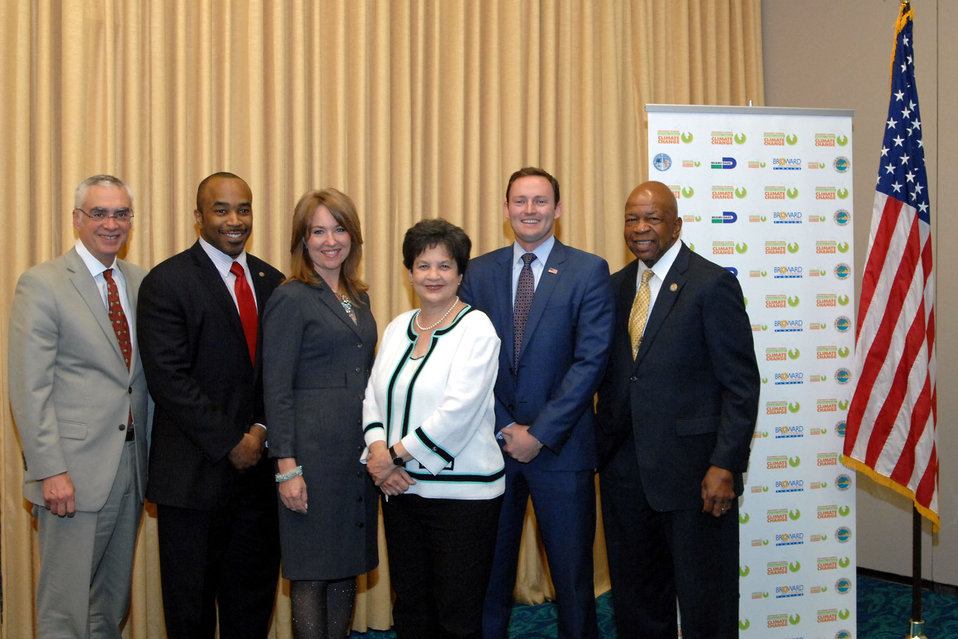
Climate Change Summit

from left) EPA Deputy Administrator Deputy Administrator Bob Perciasepe joined Representative Bobby Powell from the Florida House of Representatives, Mayor of Broward County, Kristin Jacobs, and Congressmen Lois Frankel, Patrick Murphy, and Elijah Cummings at the Southeast Florida Regional Climate Leadership Summit in Fort Lauderdale, Florida